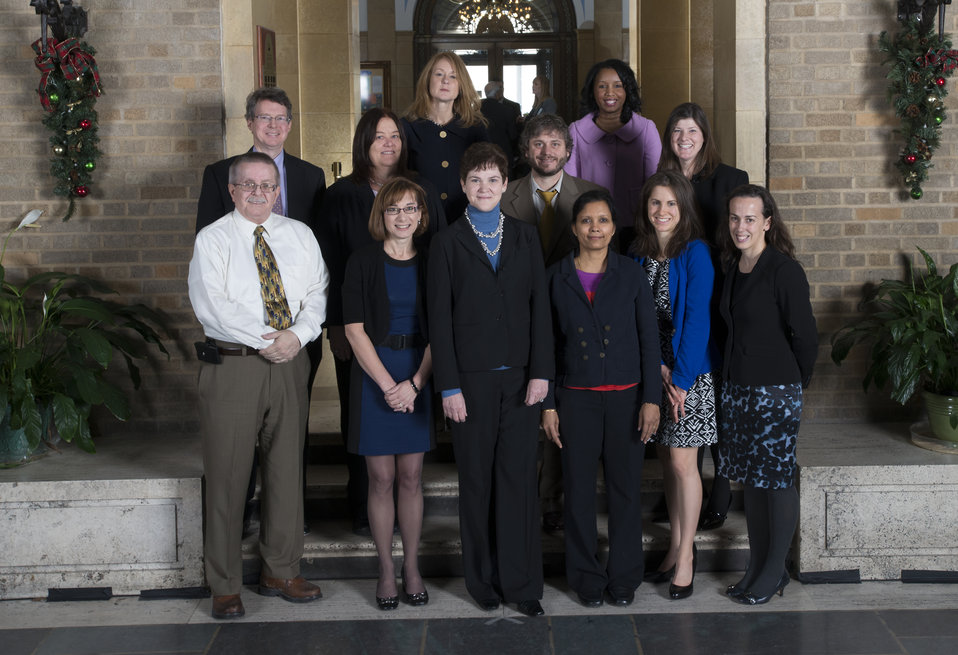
Agriculture Deputy Secretary Krysta Harden stands with the Smart Snacks in Schools Standards, Food and Nutrition Service from Alexandria, VA on the patio at the U.S. Department of Agriculture (USDA) n Washington, D.C. on Wednesday, Dec. 11, 2013. The team received the Secretary’s Honor Award for extraordinary efforts for the timely publication of the Smart Snacks in School Standards.